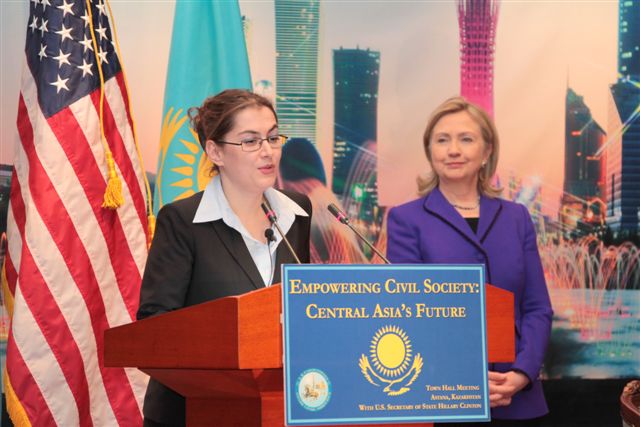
Secretary Clinton Is Introduced at the Town Hall

U.S. Secretary of State Hillary Rodham Clinton is introduced at the Town Hall on Empowering Civil Society for Central Asia's Future in Astana, Kazakhstan, on November 30, 2010.